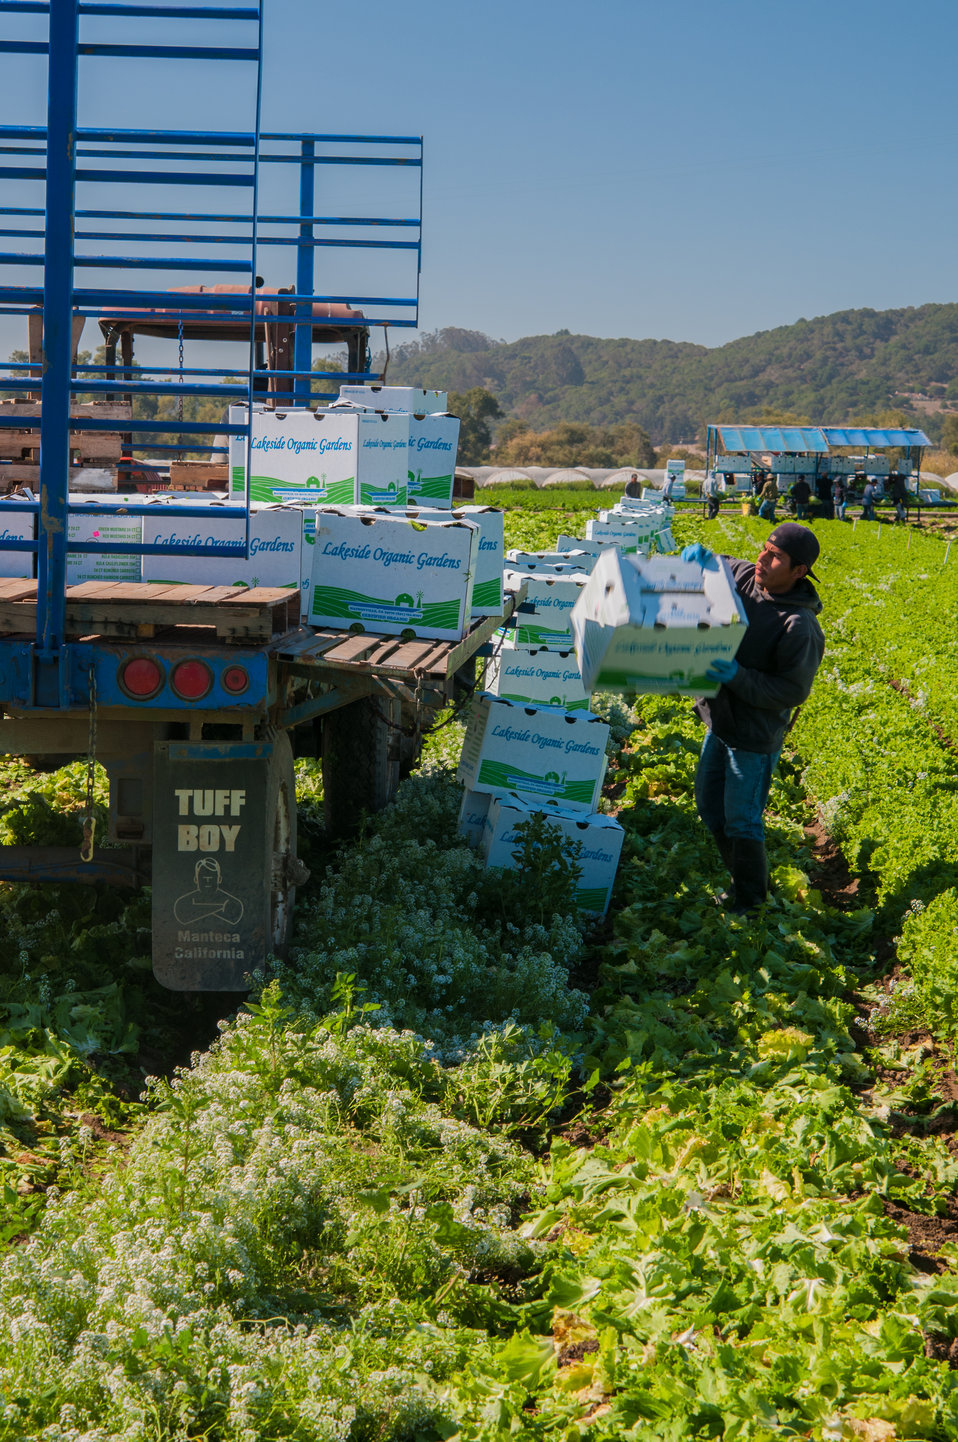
Migrant workers harvest Letttuce at Lakeside Organic Gardens in Watsonville, CA on Tuesday, Aug. 27, 2013.